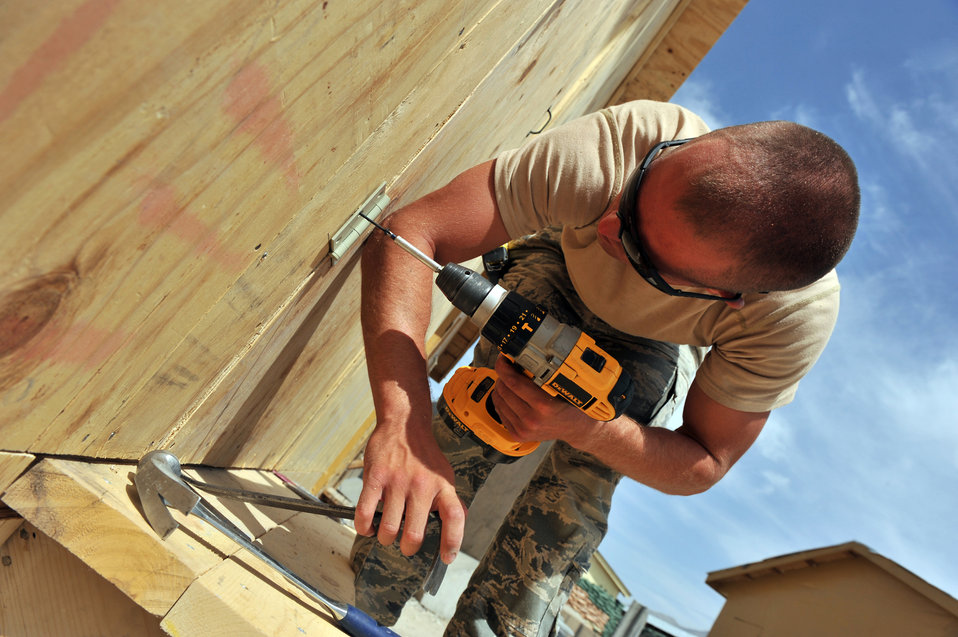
Prime BEEF

Airman 1st Class Tyler Saulsgiver installs a door on a newly built dining facility expansion May 23, 2011, at a combat outpost in Afghanistan. Airman Saulsgiver is a structural journeyman assigned to the 577th Expeditionary Prime Base Engineer Emergency Force Squadron.